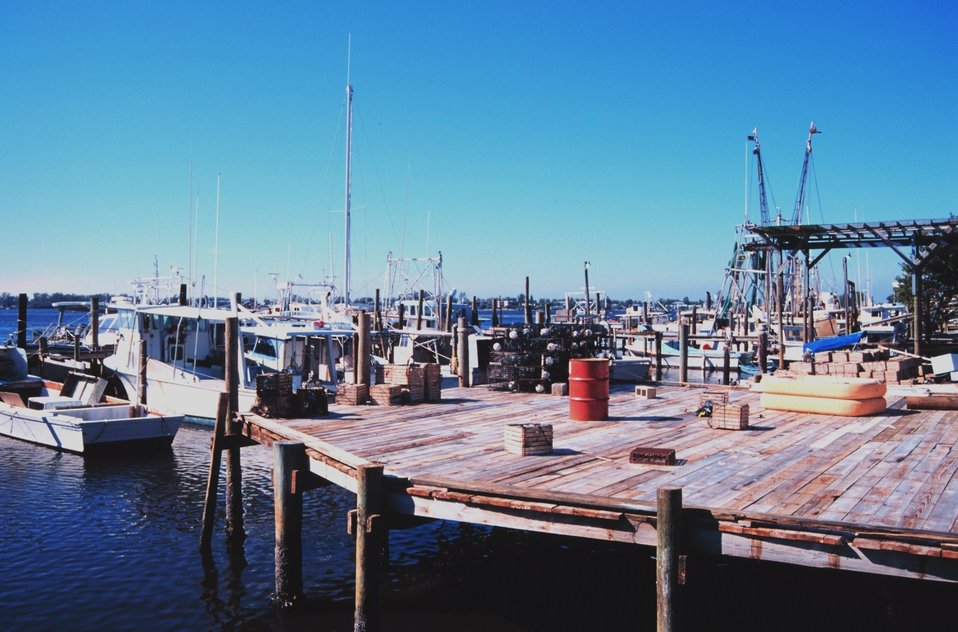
Shrimp, snapper, grouper, and stone crab fishing boats at A. P. Bell Fish Co.